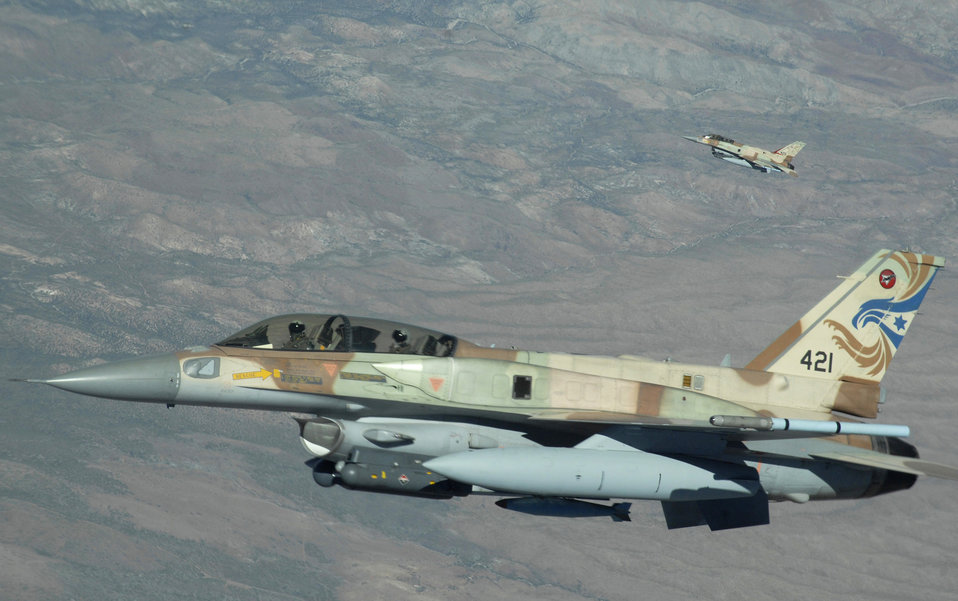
Realistic training with Red Flag

A two-ship of Israeli air force F-16s from Ramon Air Base, Israel, head out to the Nevada Test and Training Range, July 17 during Red Flag 09-4. Red Flag is a realistic combat training exercise involving the air forces of the United States and its allies.